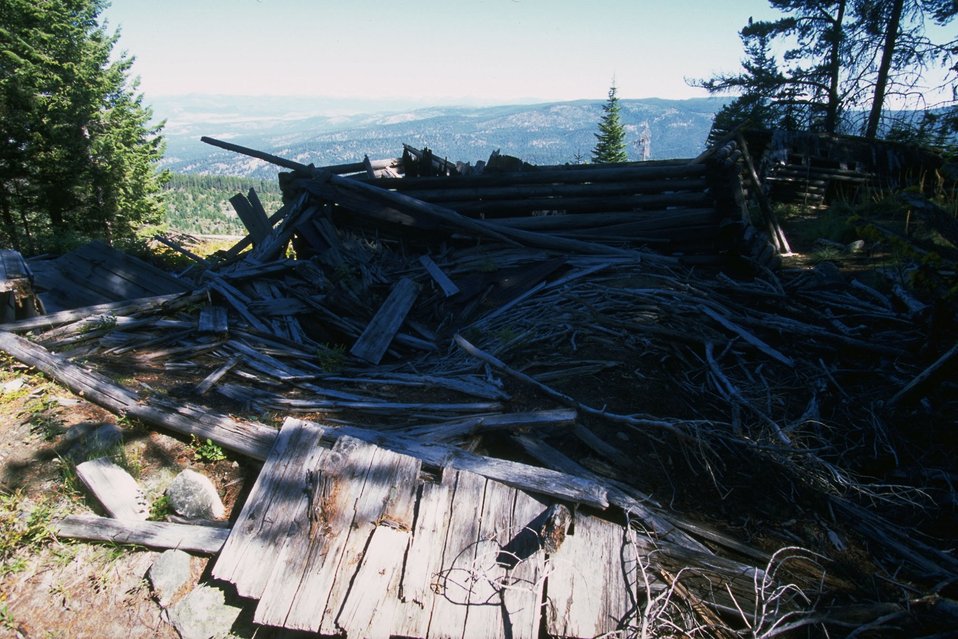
Coloma Ghost Town-collapsed cabin